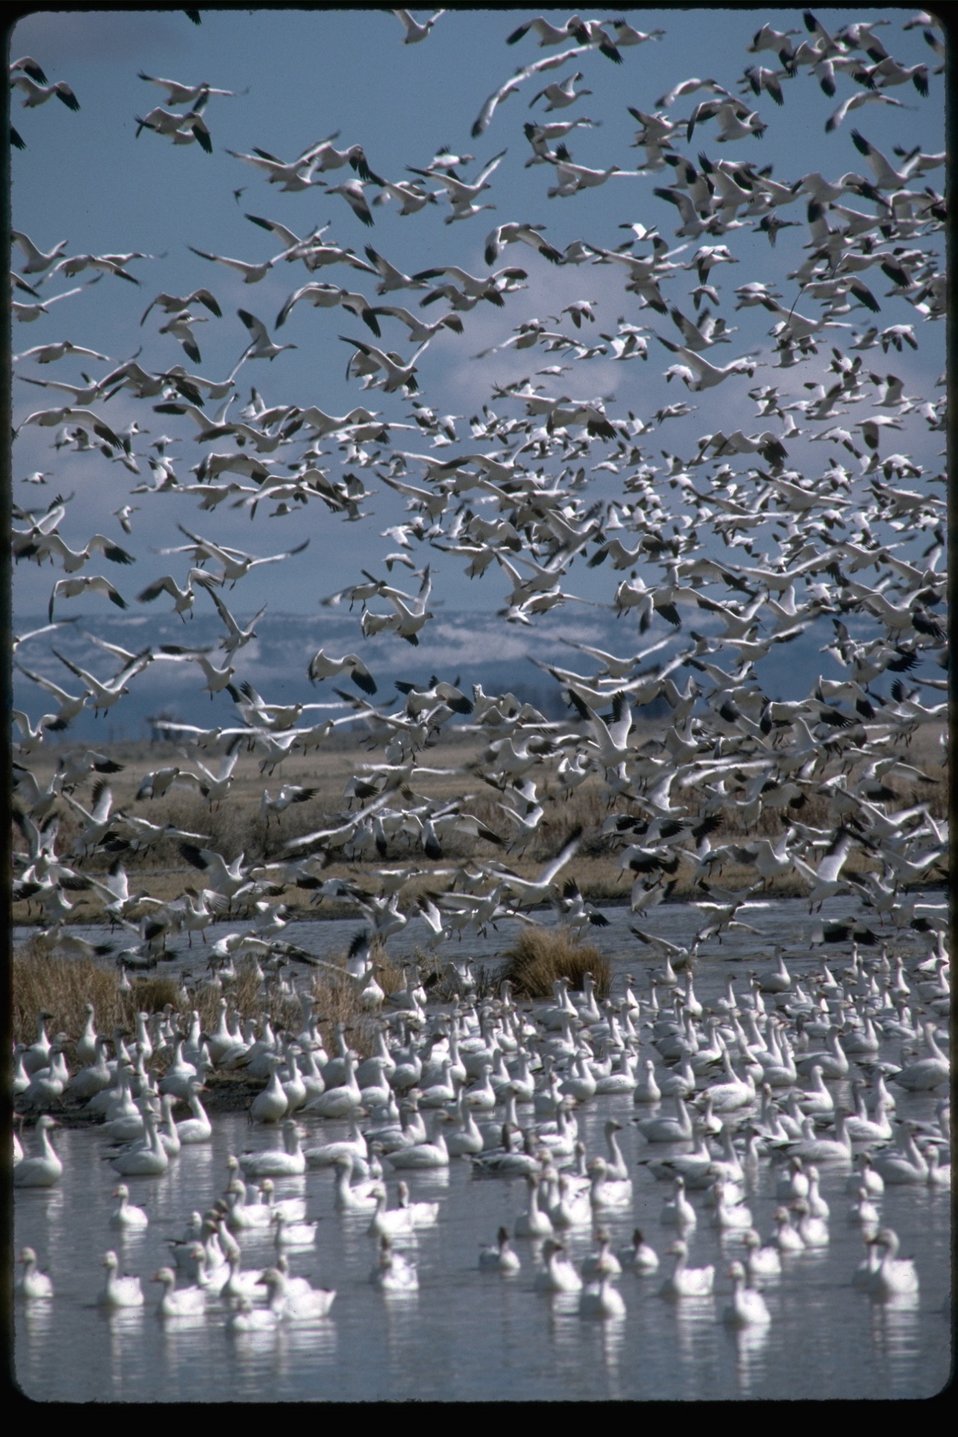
Snow Geese near Burns, Oregon